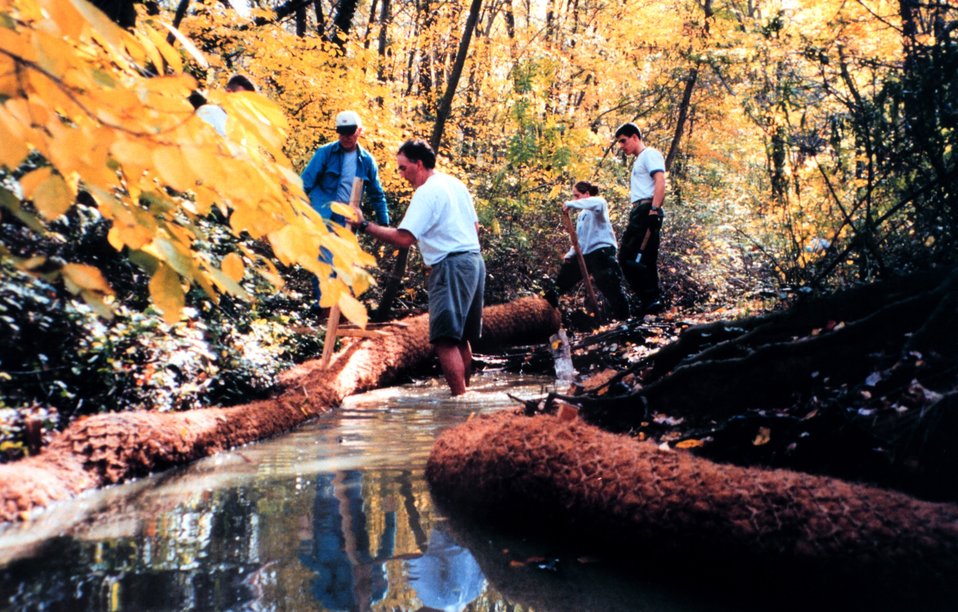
Installing Biologs to abate erosion problems along Spa Creek.